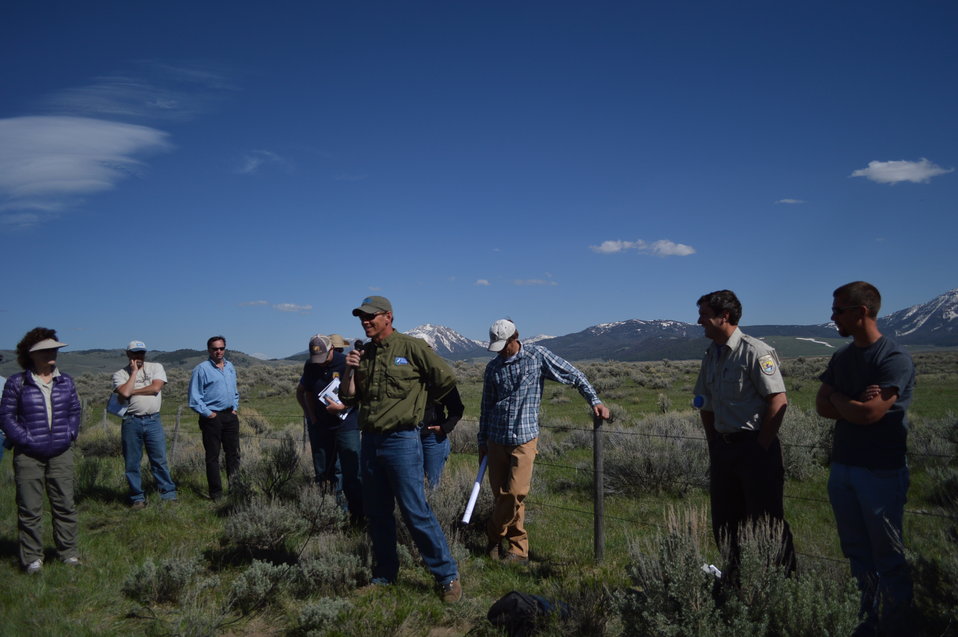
Regional Leadership Visit to Montana 2014